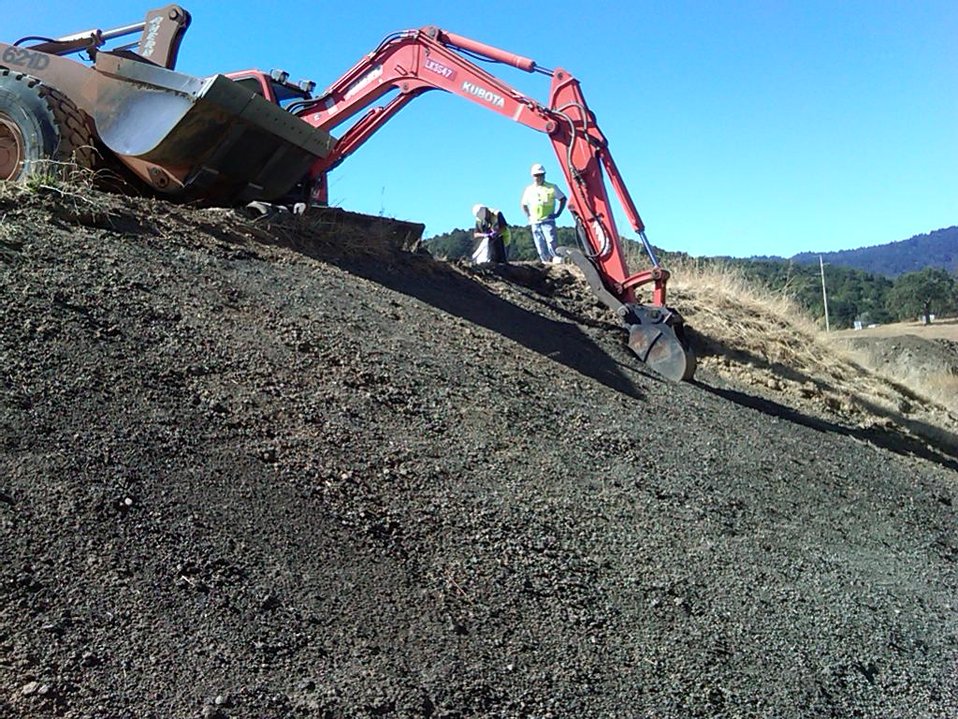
Recovery Act Supports Soil and Debris Cleanup, Groundwater Treatment at SLAC

Recovery Act workers are on track to remove more than 30,000 cubic yards of contaminated soil and debris at the SLAC National Accelerator Laboratory by September 2011.
The Recovery Act invested $14.3 million in legacy cleanup activities at SLAC. In addition to removing contaminated soil and debris that is shipped to local disposal facilities, Recovery Act workers installed three new groundwater treatment systems.